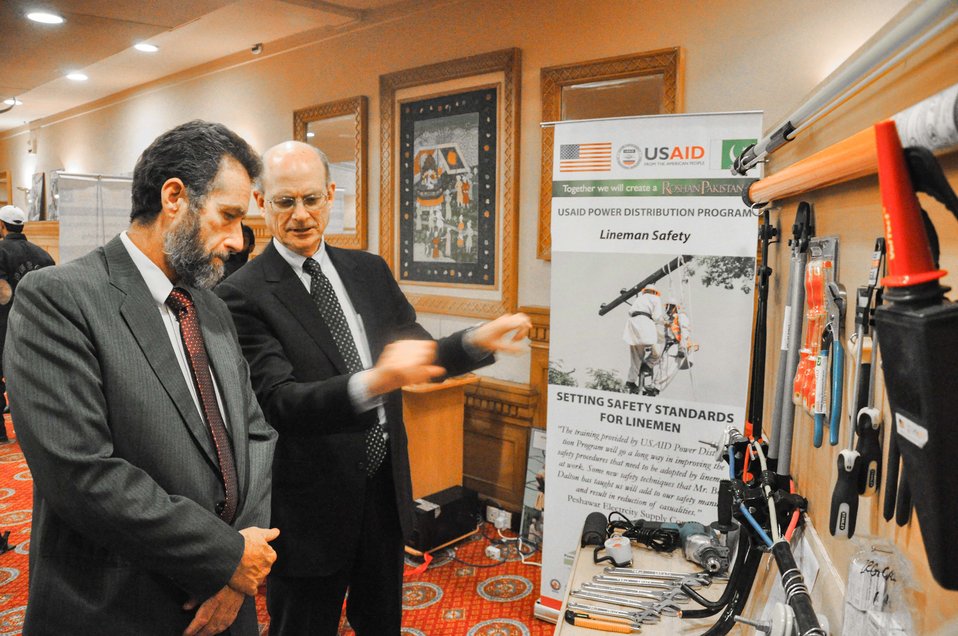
Michael Curtis Being Briefed by Bob Dalton About the Use of Linemen Equipment Provided by USAID